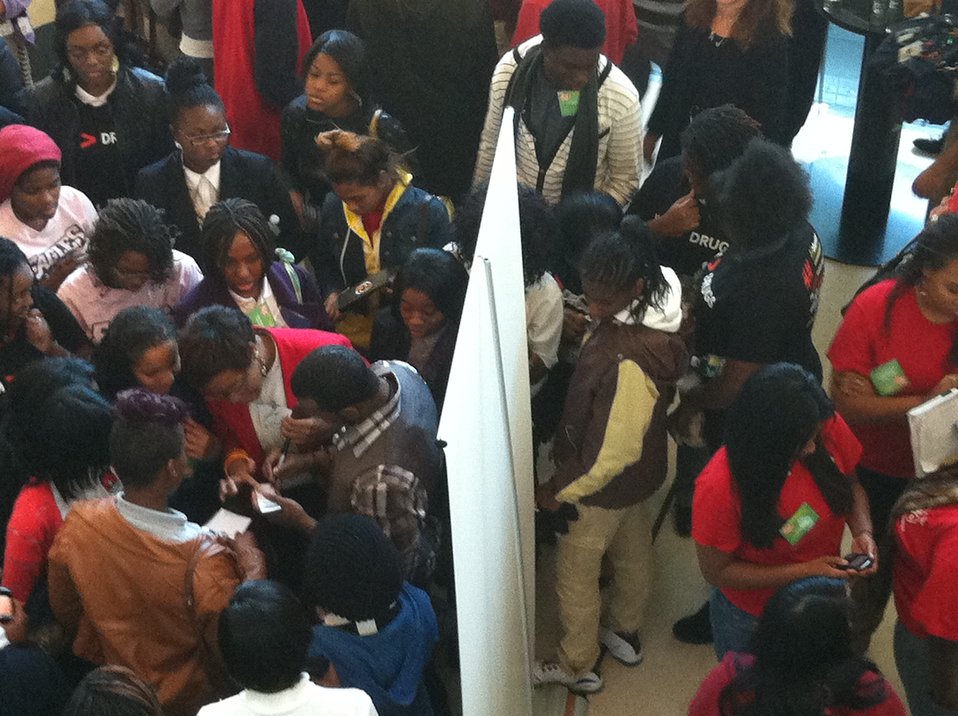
Mentor 17